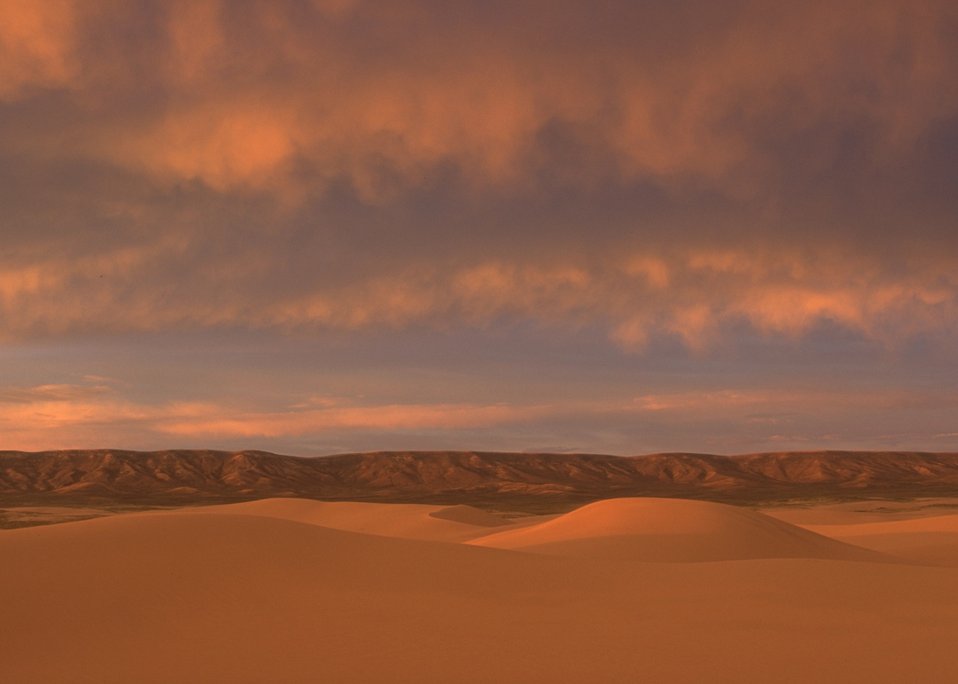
Passing storm at sunset over OHV Sand Dunes Area, Rock Springs Field Office.